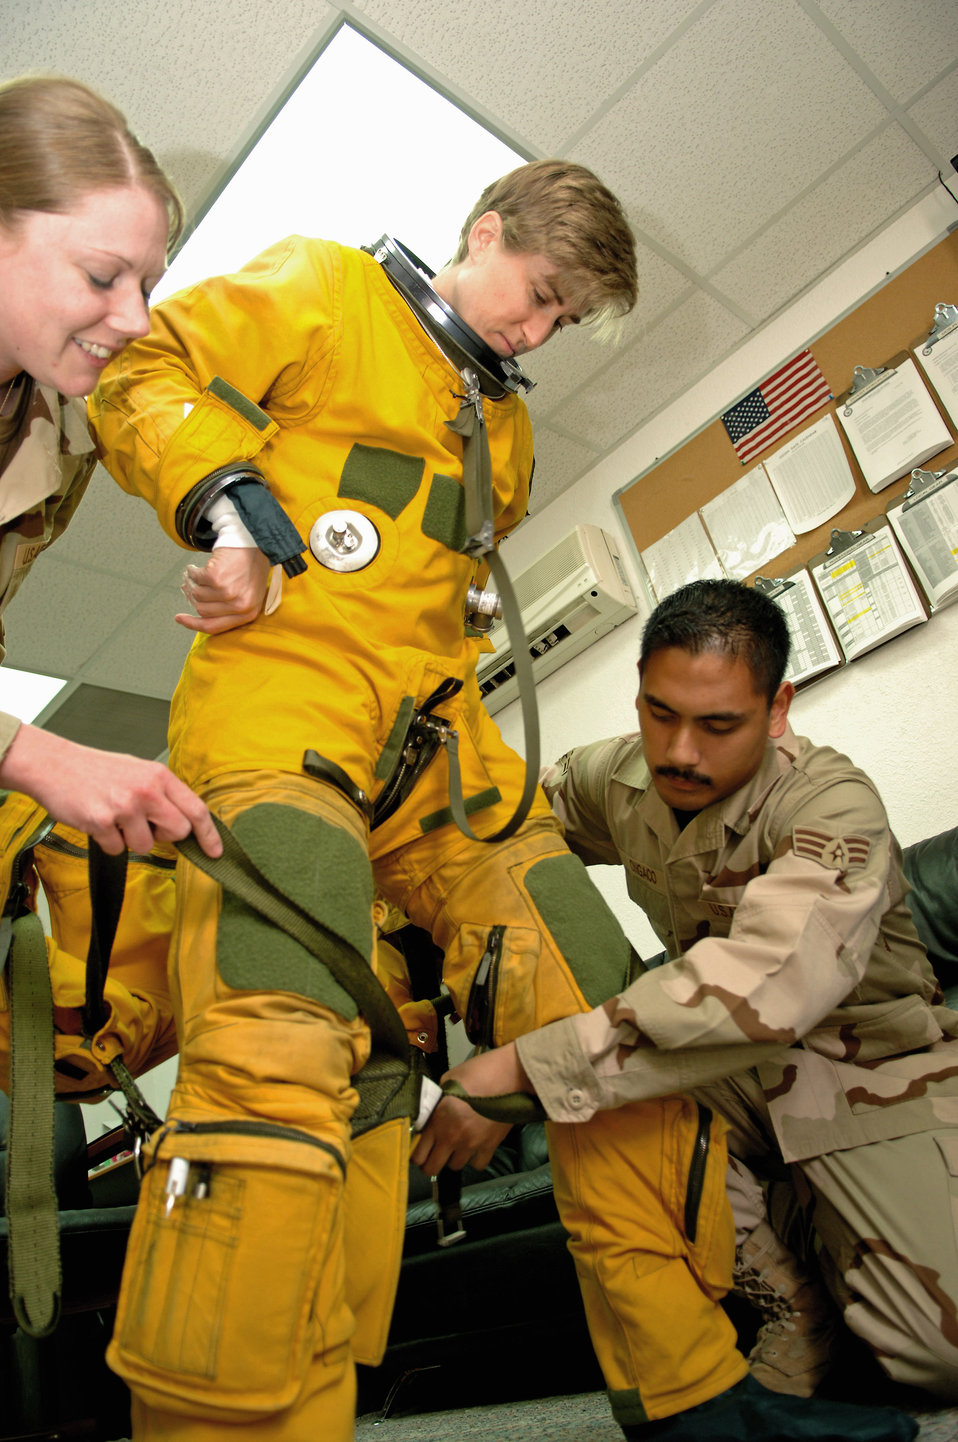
Female U-2 pilots bringing ISR to commanders below

Capt. Heather Fox, a U-2 Dragon Lady pilot with the 99th Expeditionary Reconnaissance Squadron, stands while Senior Airman Roric Ongaco (right) and Staff Sgt. Lisa Tetrick, 99th ERS physiological support division technicians, help attach the torso harness to her suit. She was preparing to fly a reconnaissance mission March 25 from an air base in Southwest Asia. Captain Fox is one of only three female U-2 pilots currently serving in the Air Force.